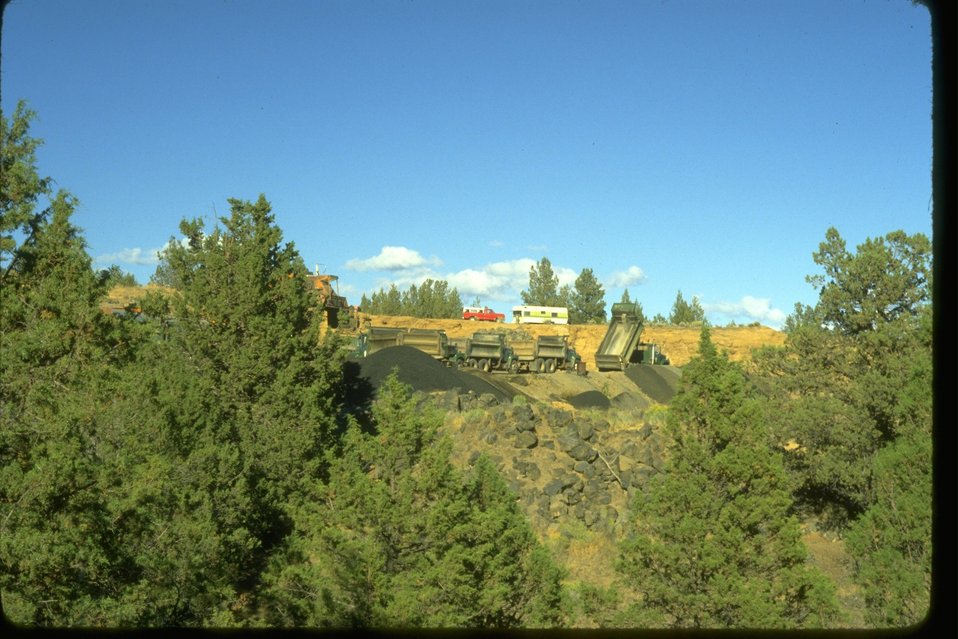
Windy Ridge gravel pit.